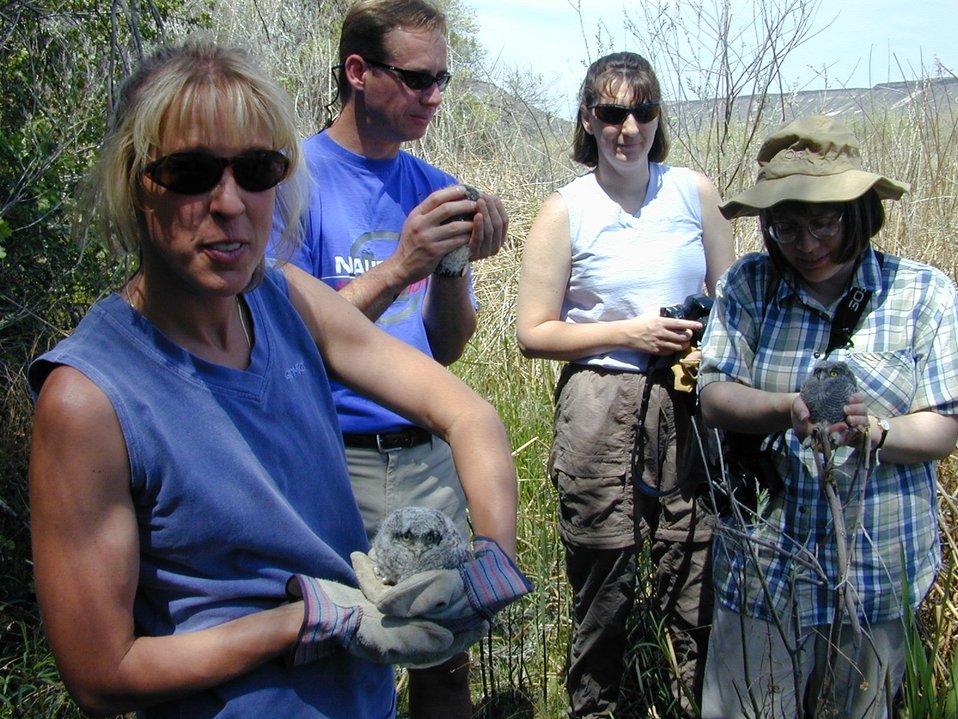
Environmental Education Fire Workshop Timberline High School Fall 2000